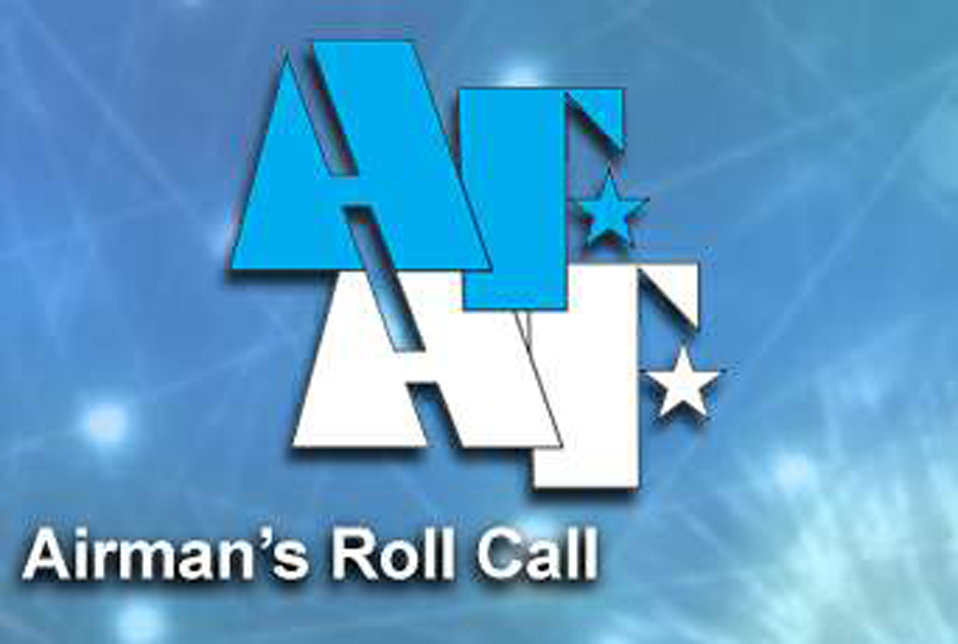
Airman's Roll Call: AF assistance campaign ends May 1

This week's Airman's Roll Call focuses on this year's Air Force Assistance Fund campaign, which ends May 1.